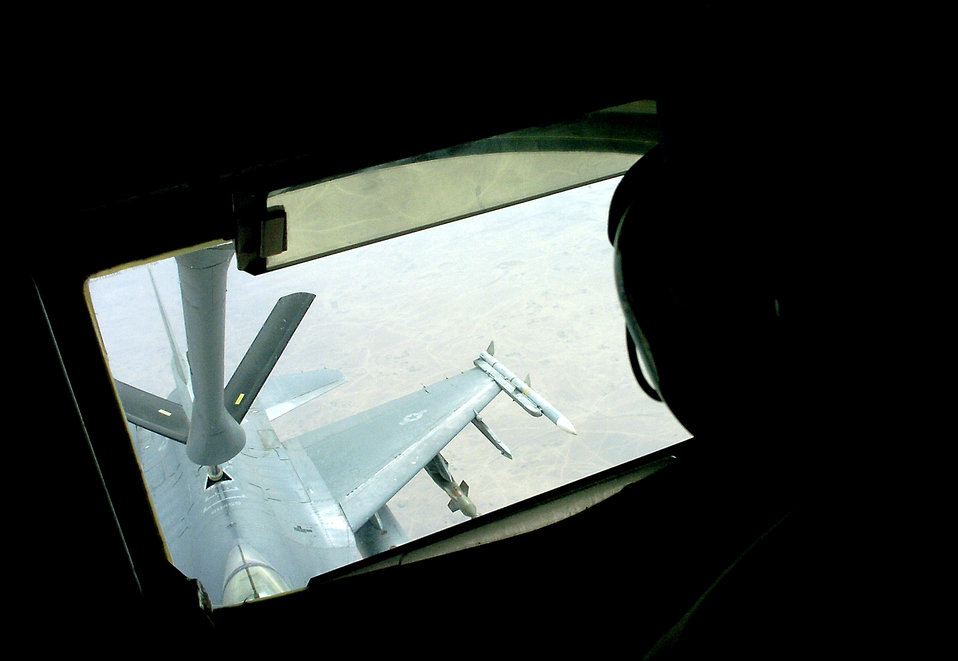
Close-air-support mission

An F-16 Fighting Falcon flies into position as Airman Morgan Clover lowers the refueling boom of a KC-135 Stratotanker on Sunday, May 7, 2006, over Iraq. Airman Clover is deployed to the 340th Expeditionary Air Refueling Squadron in Southwest Asia from McConnell Air Force Base, Kan.